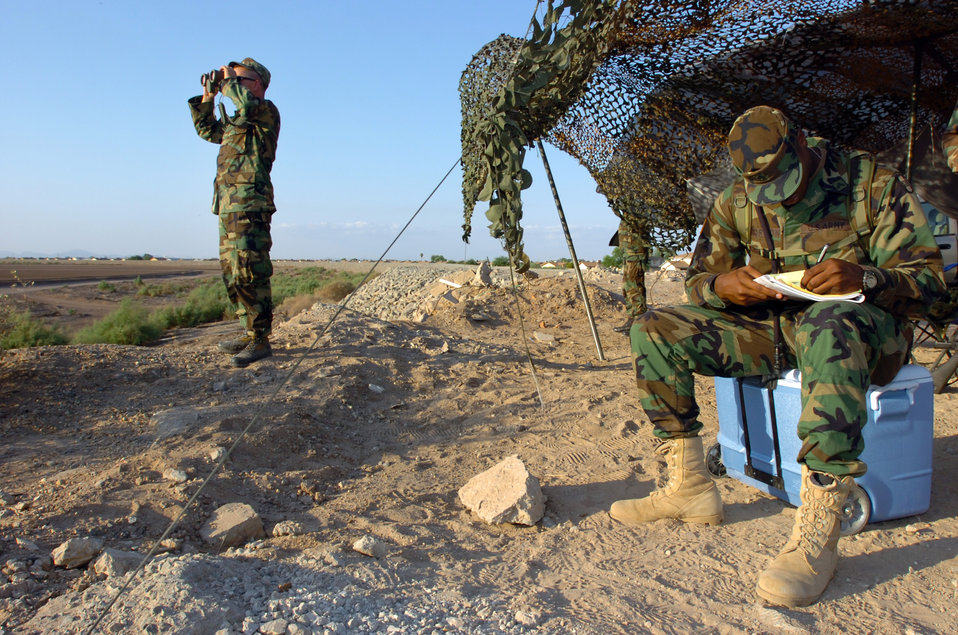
Operation Jump Start

Army Cpl. Javin Morton draws a grid sketch of his site to improve his navigation at San Luis, Ariz., on July 30. Soldiers and Airmen from the North Carolina National Guard are deployed to Arizona in support of Operation Jump Start. Airmen are providing support for annual training by guardsmen who are working with U.S. Customs and Border Protection.